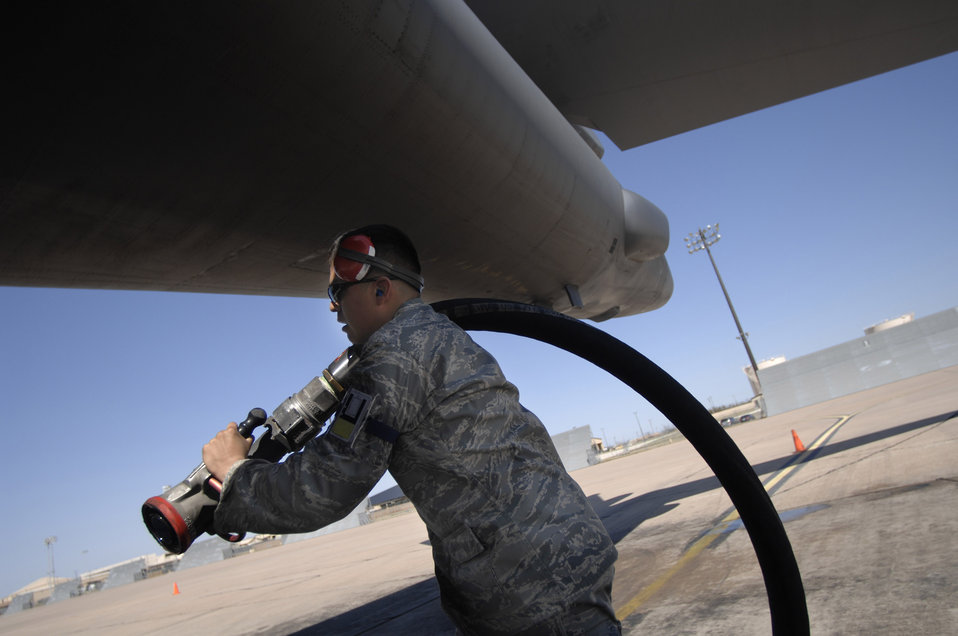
B-1B achieves first supersonic flight using synthetic fuel

Airman Jesus Abalos pulls out a hose to inject fuel into a B-1B Lancer March 19 at Dyess Air Force Base, Texas. The bomber was the Air Force's first aircraft to fly at the supersonic speeds using a 50/50 blend of synthetic and petroleum fuel. The supersonic flight occured over the White Sands Missile Range airspace in south-central New Mexico, but took off from Dyess AFB. Airman Abalos is a fuels distribution specialist with the 7th Logistics Readiness Squadron.